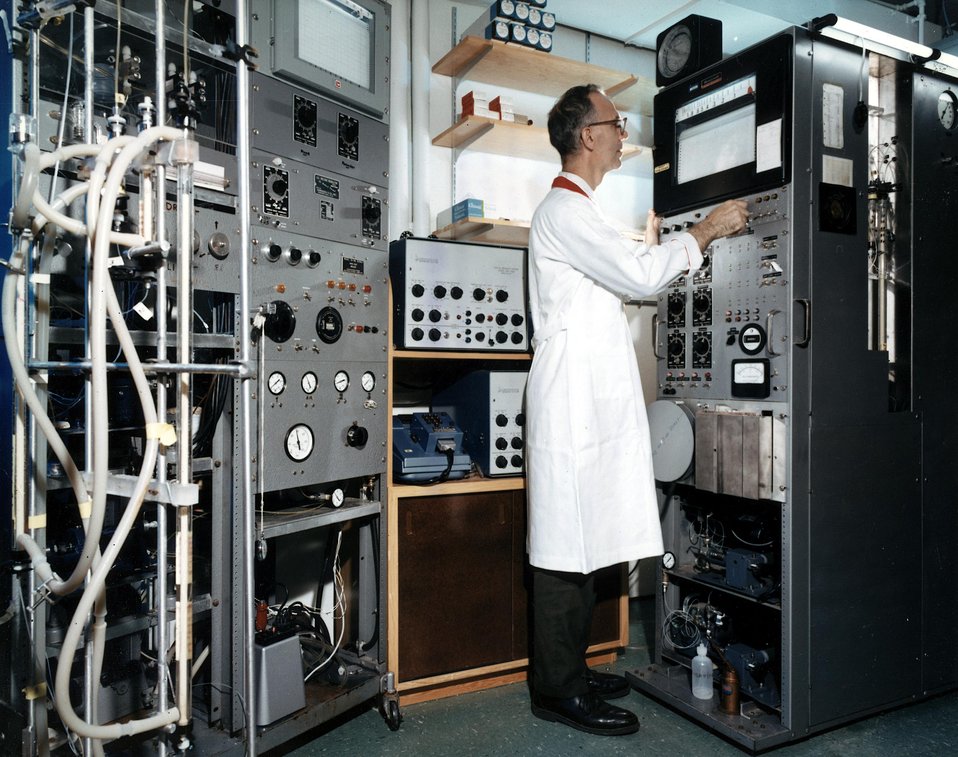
Operation of automatic amino acid analyzers. Amino acid mixtures are separated by
chromatography on ion-exchange columns with the use of buffer solutions as eluents.